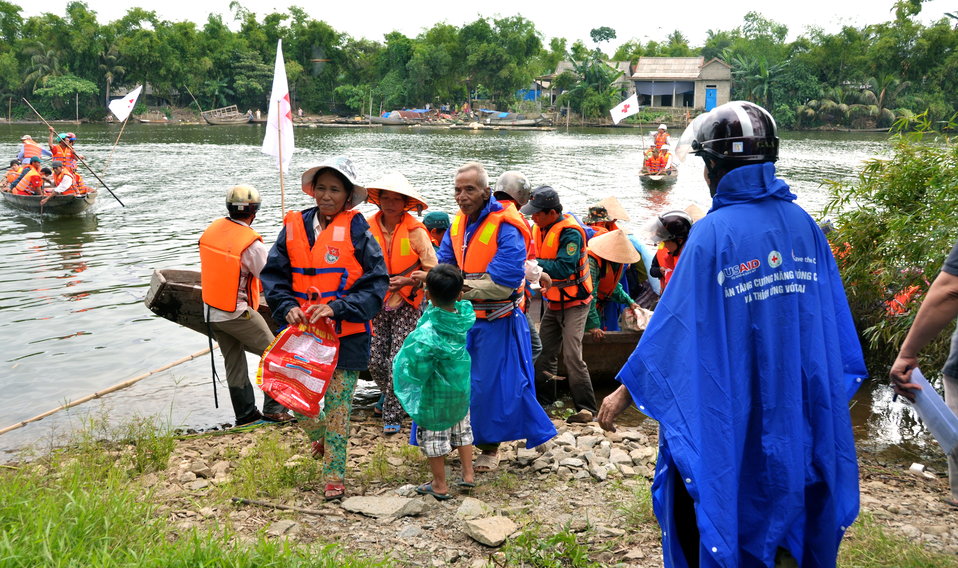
USAID and Save the Children support community evacuation drill and emergency preparedness in central Vietnam

Loc An Commune, Phu Loc District, Thua Thien Hue Province
December 4, 2012, Photo: Richard Nyberg, @USAIDVietnam